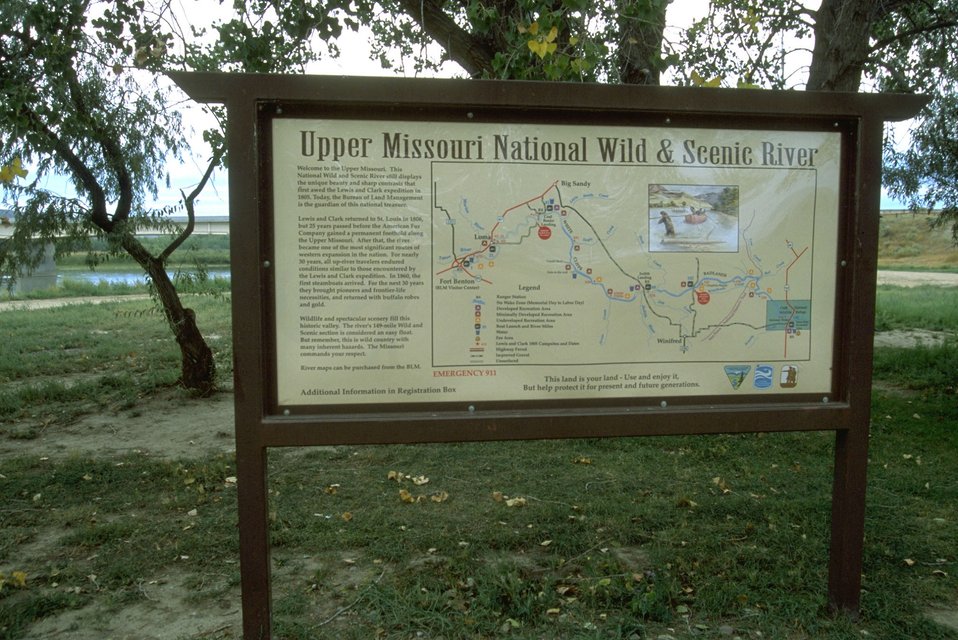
Sign at Judith Landing